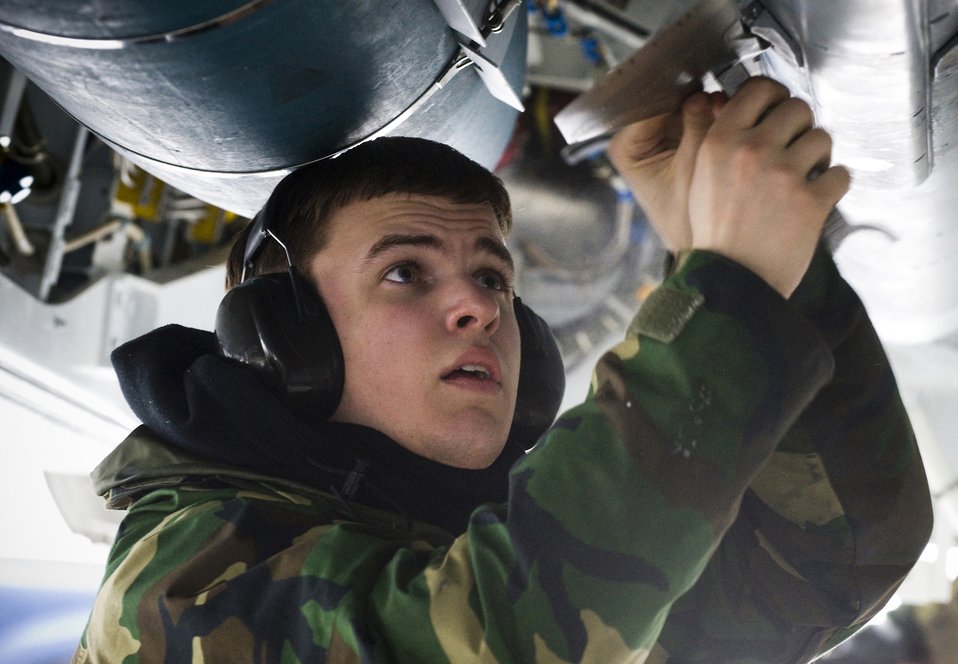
Alaska's F-22s prepare for IOC

Airman 1st Class Jacob Dean attaches fins to munitions loaded in the F-22A Raptor bomb bays. For the first time at Elmendorf Air Force Base, Alaska, a mock bomb drop over Alaska, Jan. 16, provides integral training for both fighters and maintainers in preparation to declare its initial operation capabilities. Airman Dean is assigned to the 3rd Aircraft Maintenance Squadron, 90th Aircraft Maintenance Unit.